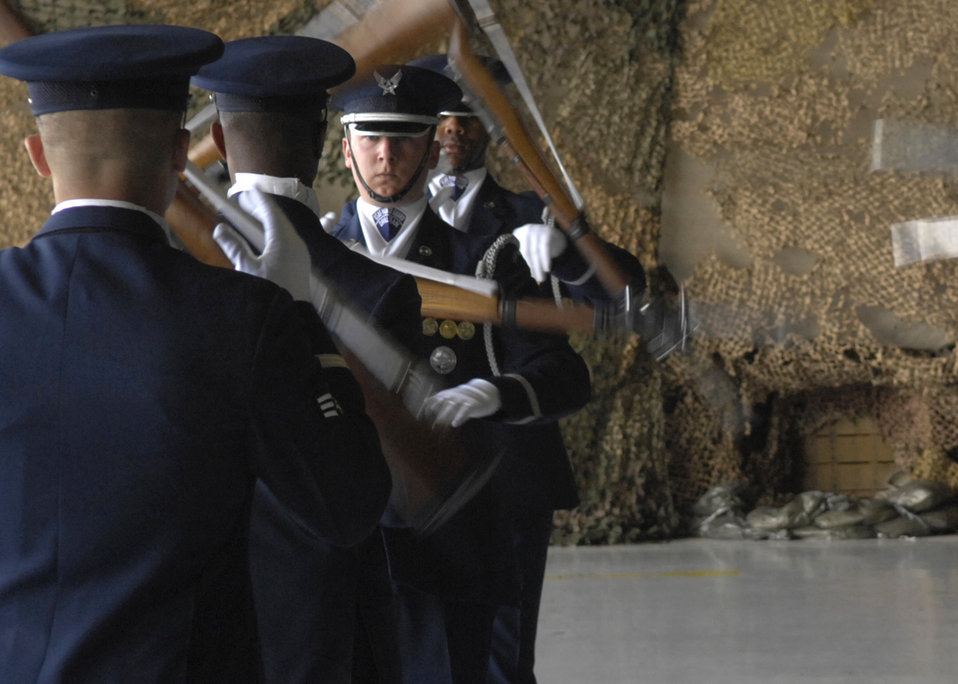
Showcasing the Air Force mission

Senior Airman David Leininger, of the United States Air Force Honor Guard Drill Team, performs March 24 during the air show at Luke Air Force Base, Ariz. The drill team is the traveling component of the Air Force Honor Guard and tours Air Force bases worldwide showcasing the precision of today's Air Force to recruit, retain and inspire Airmen for the Air Force mission.